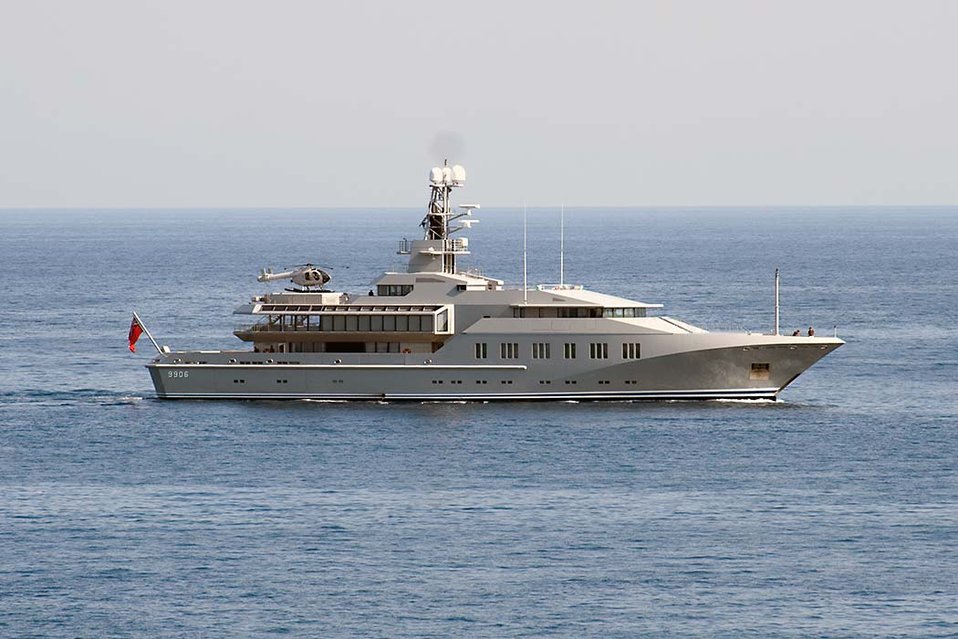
Deutsch: Yacht 'Skat' in Rhodos 2009